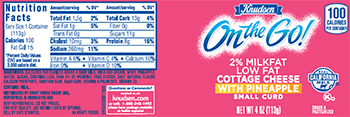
RECALLED – Cottage Cheese products

May 17, 2014 – Product Recall – Kraft Foods Group Voluntarily Recalls Select Cottage Cheese Products Due to Out-of-Standard Storage Temperatures
Certain Knudsen Cottage Cheese, Breakstone’s Cottage Cheese, Simply Kraft Cottage Cheese and Daily Chef Cottage Cheese Products Included in the Recall
.